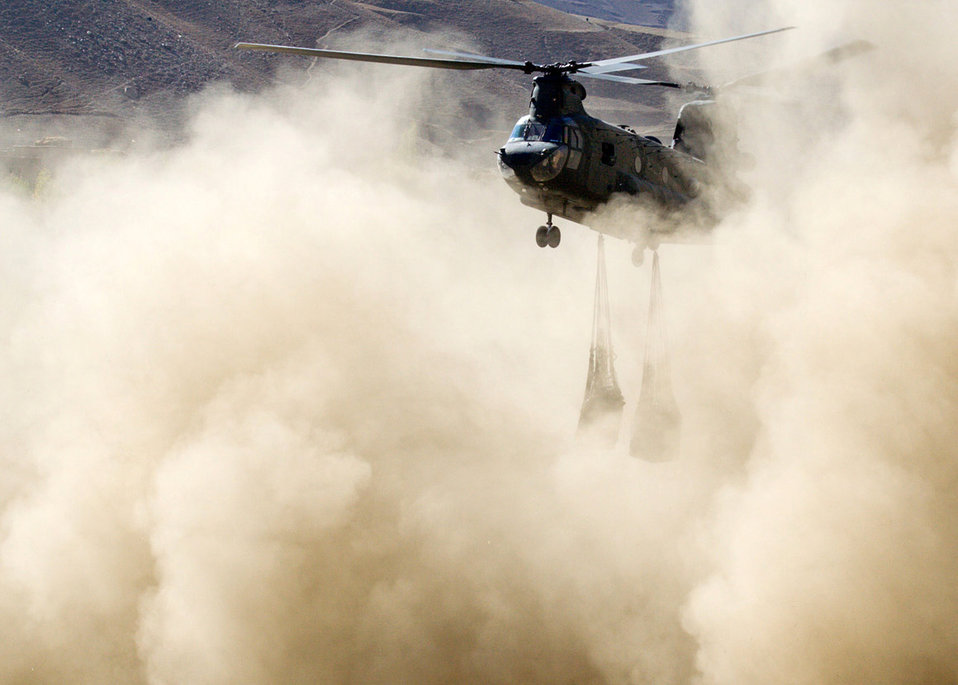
Humanitarian Relief

Humanitarian assistance is dropped into the Panjshir Province's Paryan District Oct. 28. At nearly 10,000 feet above sea level, Paryan has the highest elevation of the six districts in the Panjshir Valley. Since the rough and narrow road to the district cannot support truck transport, helicopter airlift of supplies was necessary. Using slings around pallets of food supplies, a Chinook helicopter's crew prepares to drop off one of two loads totaling four tons to help the district's 38,000 residents prepare for winter.